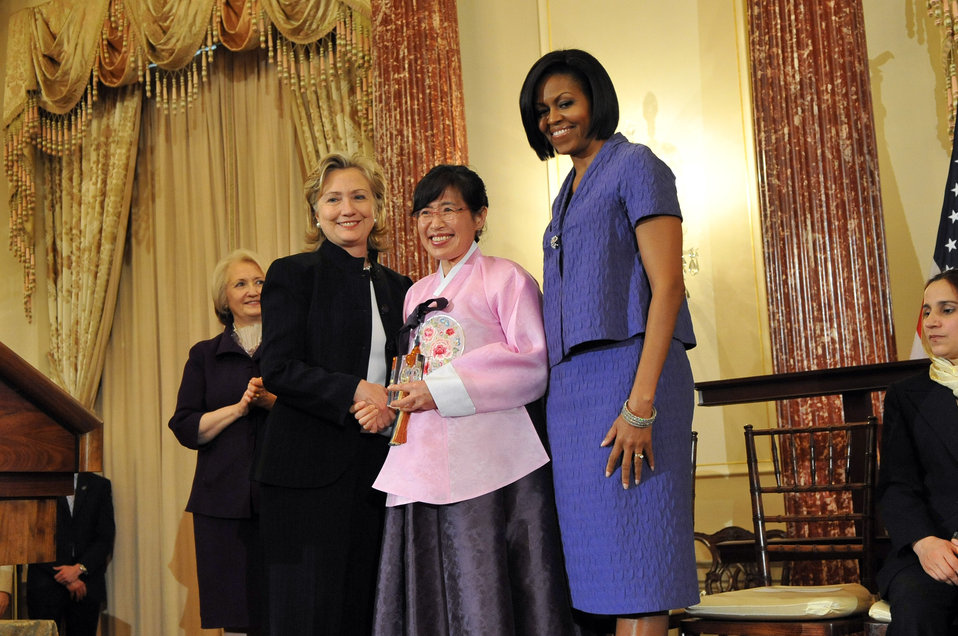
Secretary Clinton With First Lady Michelle Obama and Honoree Dr. Lee Ae-ran of the Republic of Korea

U.S. Secretary of State Hillary Clinton and First Lady Michelle Obama stand with Honoree Dr. Lee Ae-ran of the Republic of Korea at the 2010 International Women of Courage Awards at the U.S. Department of State, Washington, D.C. March 10, 2010.